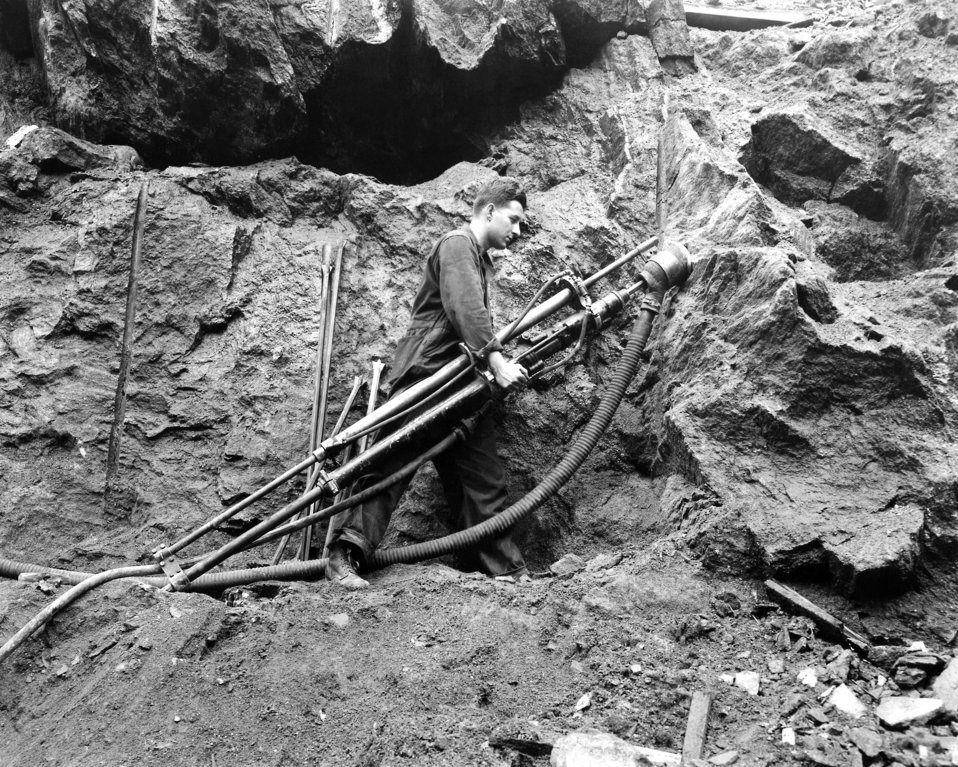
This historical image, which was provided by the Center for Disease Control's (CDC), National Institute for Occupational Safety and Health (NIOSH), depicted a miner cutting a rockface using a pneumatically-powered stephammer, which was equipped with a dust control device situated at a point from which dislodged debris would emanate. The particulates would be vacuumed away, thereby, keeping the airspace around the worksite free of airborne irritants. The man was not wearing a filtered breathing mask, goggles, gloves, or ear plugs, all of which would be required as standard protective accessories today.